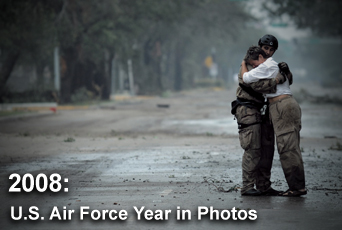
2008 Year In Photos

During 2008, military photographers have taken thousands of photographs that document the many instances of selfless service by the nation's Airmen. This year's